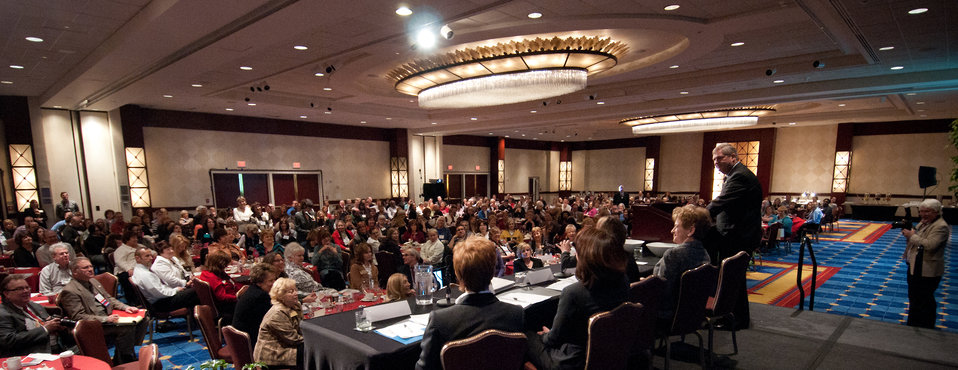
U.S. Department of Agriculture Secretary Tom Vilsack spoke with and took questions during the School Nutrition Association’s closing general session of their 39th annual Legislative Action Conference at the J.W. Marriott Hotel in Washington, D.C., on Wednesday, March 9, 2011. The theme of the Secretary Vilsack’s speech was “The Realities of Implementing New Meal Patterns and Operational Requirements.” Of the many things he spoke about, he also shared with the audience how his motivation came from how personally important it was to him, that his adopted mother made a lunch for him everyday he went to school despite the challenges of her alcoholism and family struggles. He also talked about the Healthy, Hunger-Free Kids Act of 2010 (Public Law 111-296 and how chefs were involved in the development of the USDA’s proposed updated nutrition standards for school meals development.